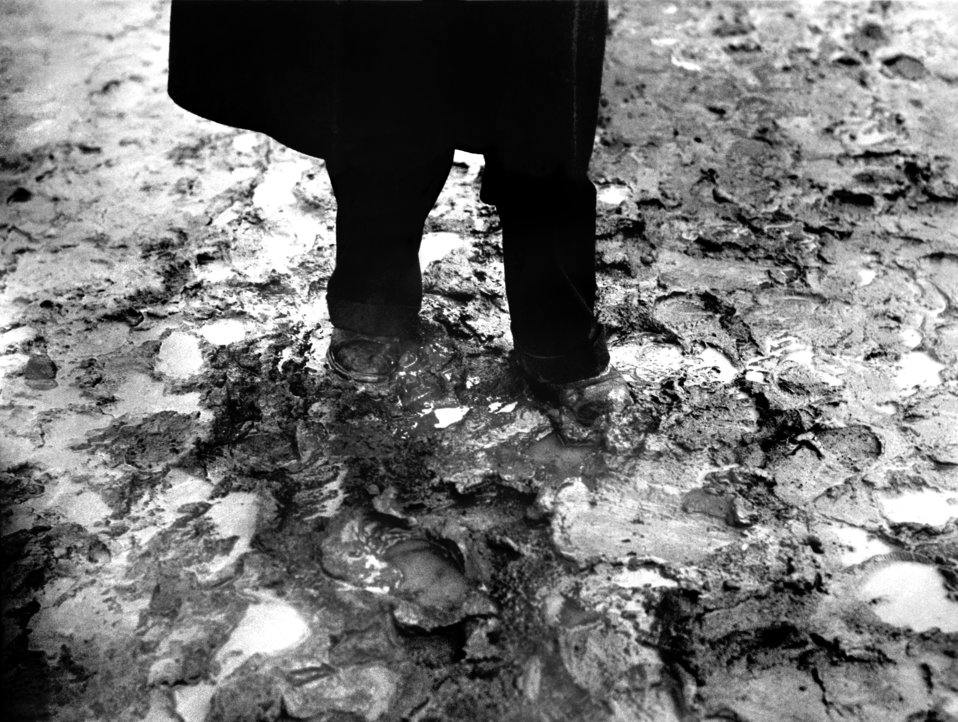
Mud Y-12 Oak Ridge 1944

MED 223 DOE photo Ed Westcott 1944 Oak Ridge Tennessee